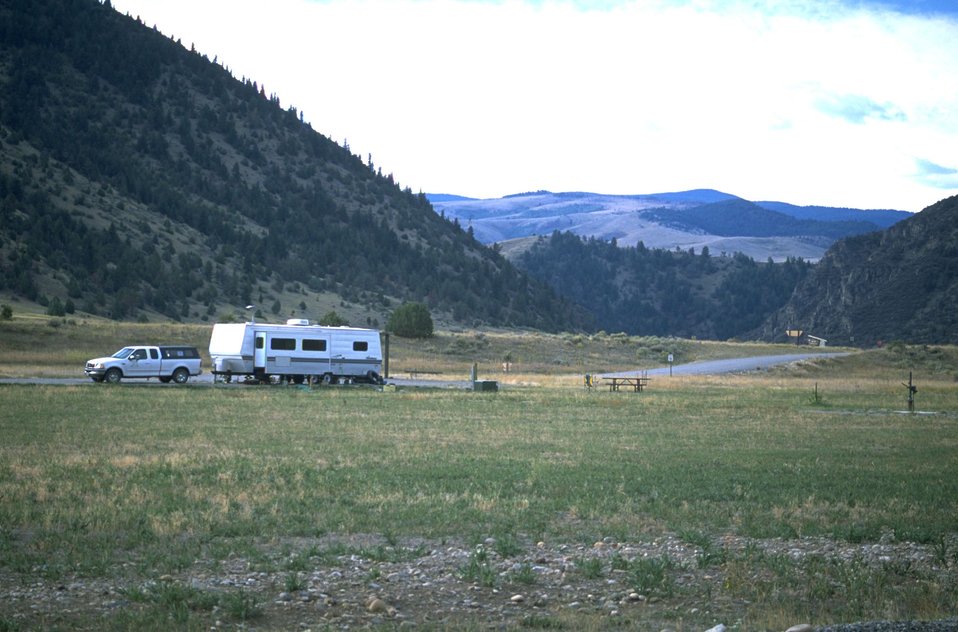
Campers at Red Mountain Campground